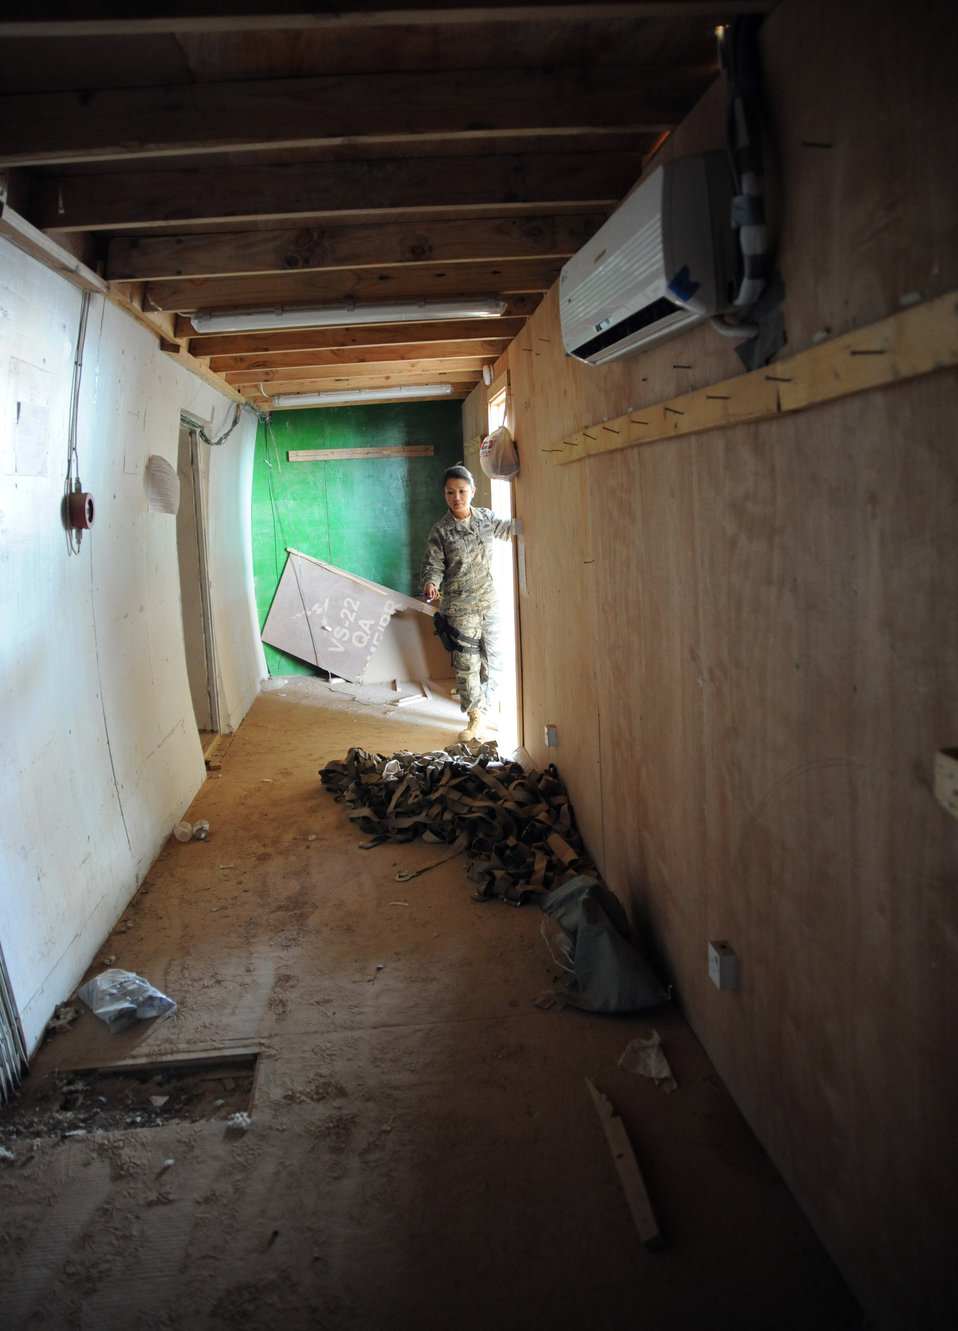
Air Force and Navy take care of Marines

Senior Master Sgt. Maria Kraft, the facilities management chief for the base command group at Al Asad Air Base, Iraq, inspects a hardened aircraft shelter Dec. 16, 2009. A handful of Airmen attached to the BCG work with Navy personnel to maintain the infrastructure of buildings, feed troops, provide shelter and ensure their needs are met at this Marine base. Sergeant Kraft is deployed from Scott Air Force Base, Ill., and hails from New York.